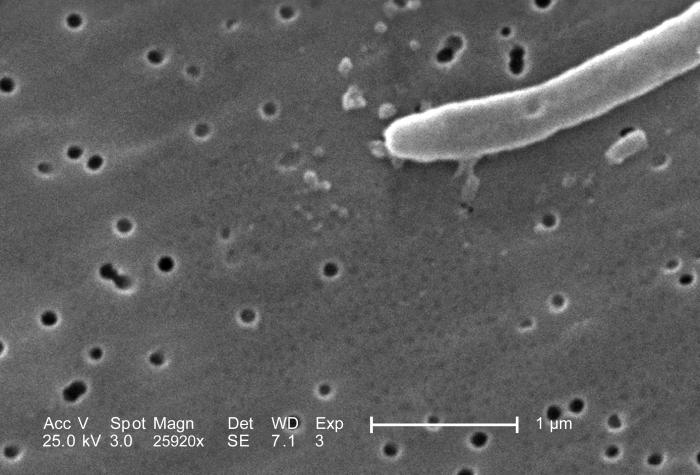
At a very high magnification of 25,920X, twice that of PHIL 10570 and 10571, this scanning electron micrograph (SEM) revealed some of the morphologic details displayed a single Gram-negative Escherichia coli bacterium. This bacterium was a member of the strain, 0:169 H41 ETEC (Enterotoxigenic E. coli).What is ETEC?